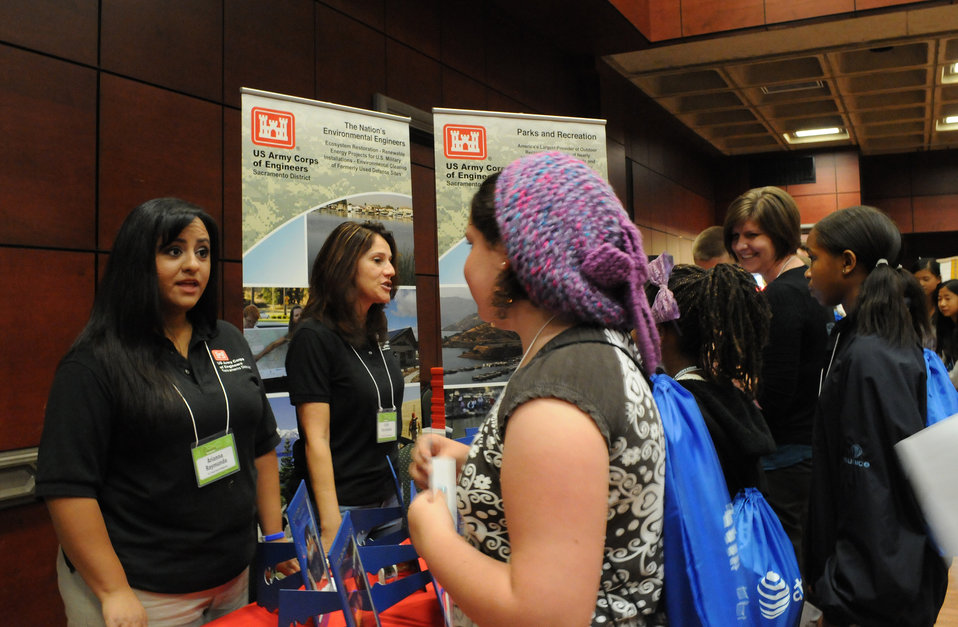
Army Corps connects with female students at CSUS conference

U.S. Army Corps of Engineers Sacramento District civil engineers Arianna Raymundo (left) and Zeffy Ruvalcaba answer questions from sixth through eighth grade girls about what the Corps does and what it’s like being an engineer at the fifth annual Expanding Your Horizons conference at California State University, Sacramento (CSUS), in Sacramento, Calif., Oct. 8, 2011.

Raymundo and Ruvalcaba were invited to the conference, a one-day science and math event for sixth to eighth grade girls, to share information about their educational and professional backgrounds and to explain the Corps’ various missions. The conference is designed to encourage students to pursue higher education and careers in science, technology, engineering and mathematics.

To spur interest in their field of work, Raymundo and Ruvalcaba shared photos of various Corps projects throughout California.